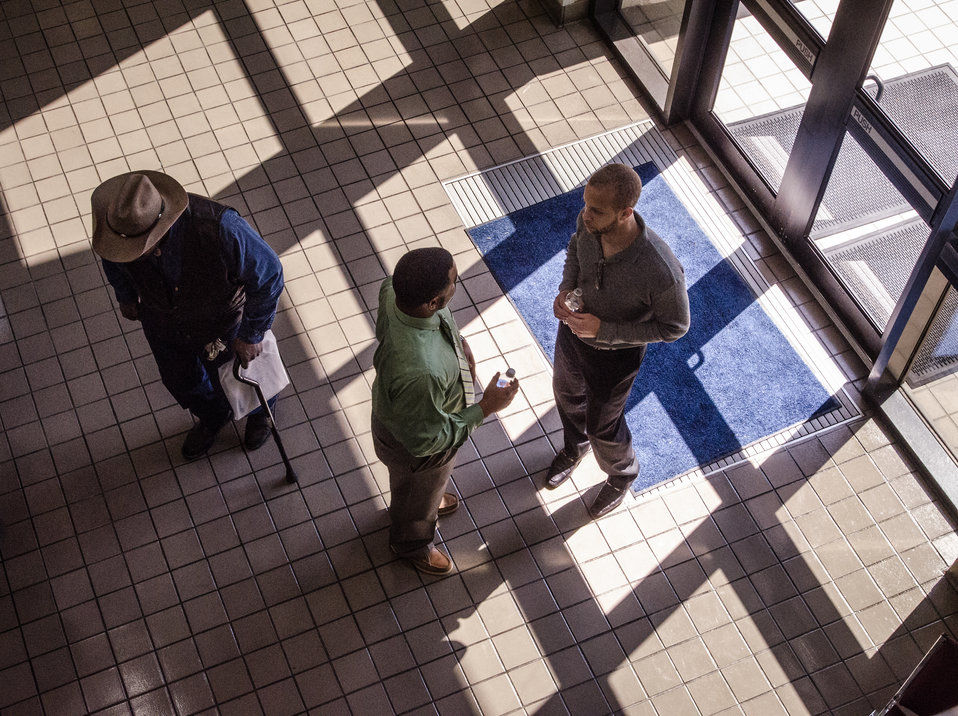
Generations of farmers, Agriculture and University staffers network during lunchtime at the “Virginia State University (VSU), U.S. Department of Agriculture (USDA) and Virginia Farmers Working Together” outreach workshop in the VSU, L. Douglas Wilder building on Thursday, March 7, 2013, in Petersburg, VA. Farmers shared and learned new ways to produce more and conduct better practices in their family agriculture businesses.